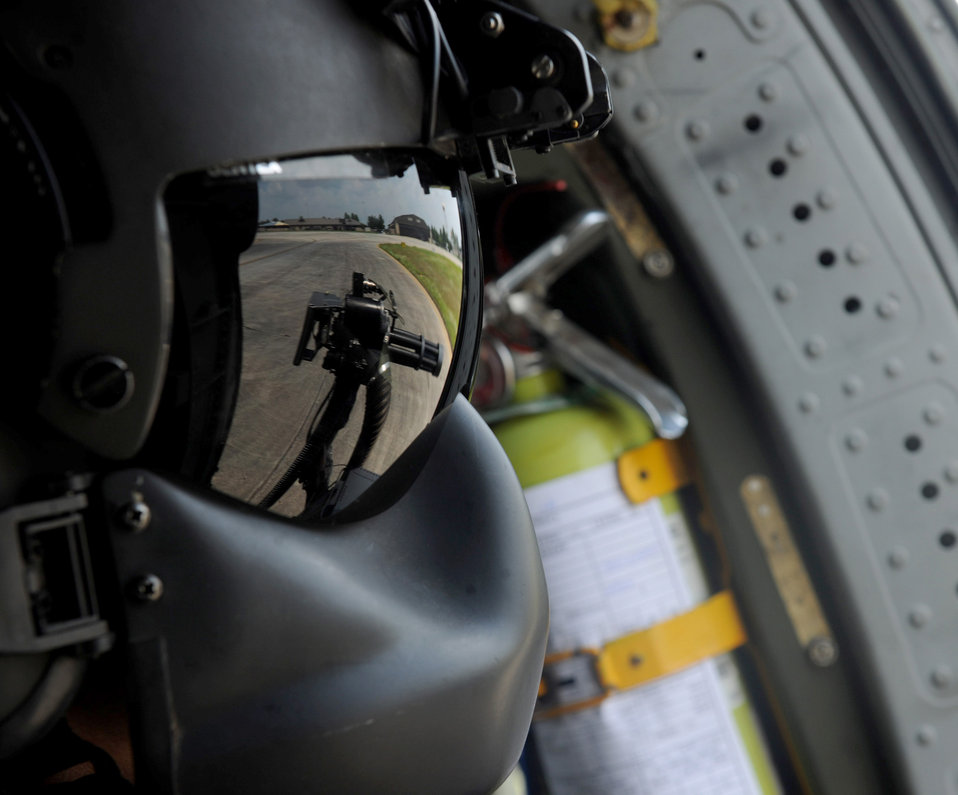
HH-60G munitions training

Senior Airman David Mitchell glances out of an HH-60G Pave Hawk as it takes off for training Aug. 25, 2010, at the bombing and gunnery range at Moody Air Force Base, Ga. The HH-60G took off with a four-man crew consisting of an aerial gunner, flight engineer and two pilots. Airman Mitchell is with the 41st Rescue Squadron flight engineer.